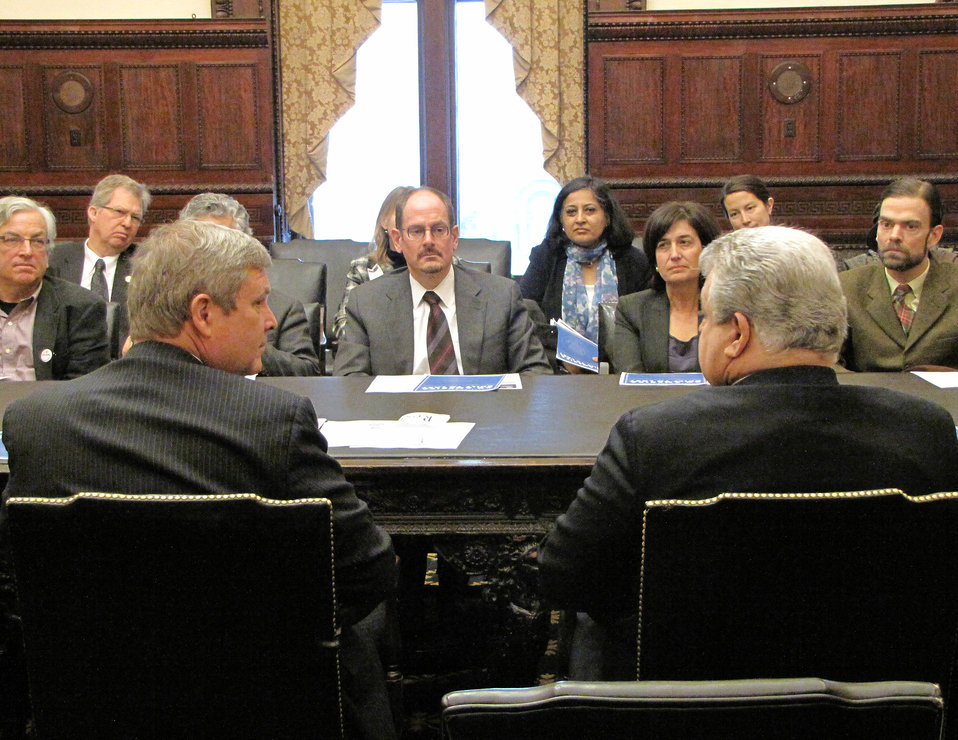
Agriculture Secretary Tom Vilsack held a roundtable meeting on Thursday, Jan. 26, 2012, with local business owners, agricultural leaders and state officials to discuss the vision laid out in President Obama's State of the Union address that will help grow the Pennsylvania economy. This meeting provided Secretary Vilsack with an opportunity to hear directly from Pennsylvanians on how to best implement the President's blueprint for an economy built to last.